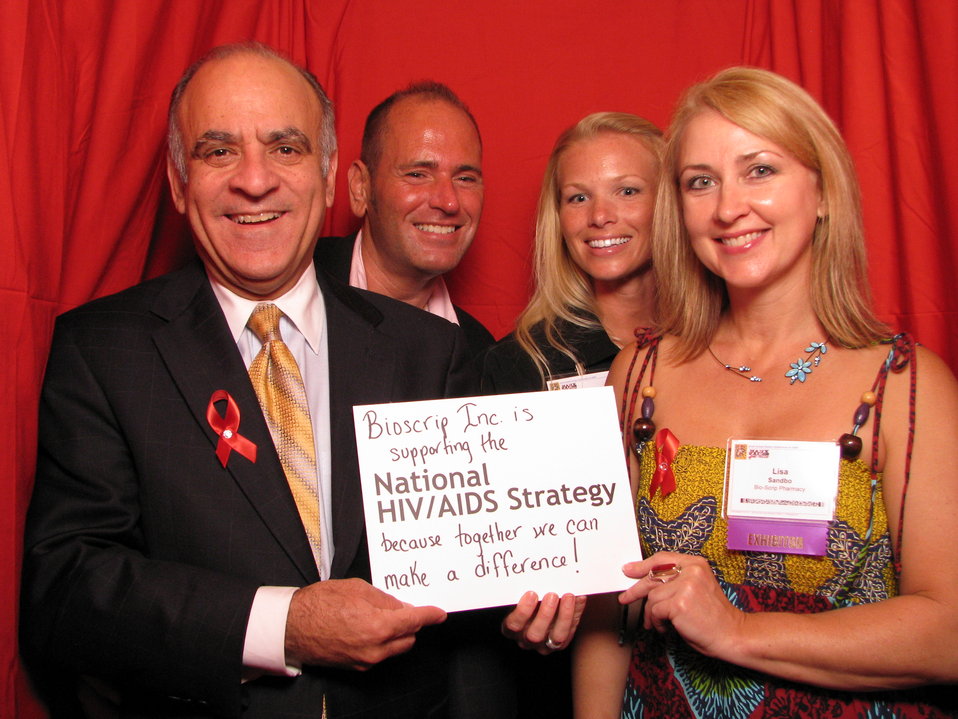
Bioscrip Inc. is supporting the National HIV/AIDS Strategy because together we can make a difference!

From the AIDS.gov photo booth at the U.S. Conference on AIDS, September 2010 (Orlando, FL).